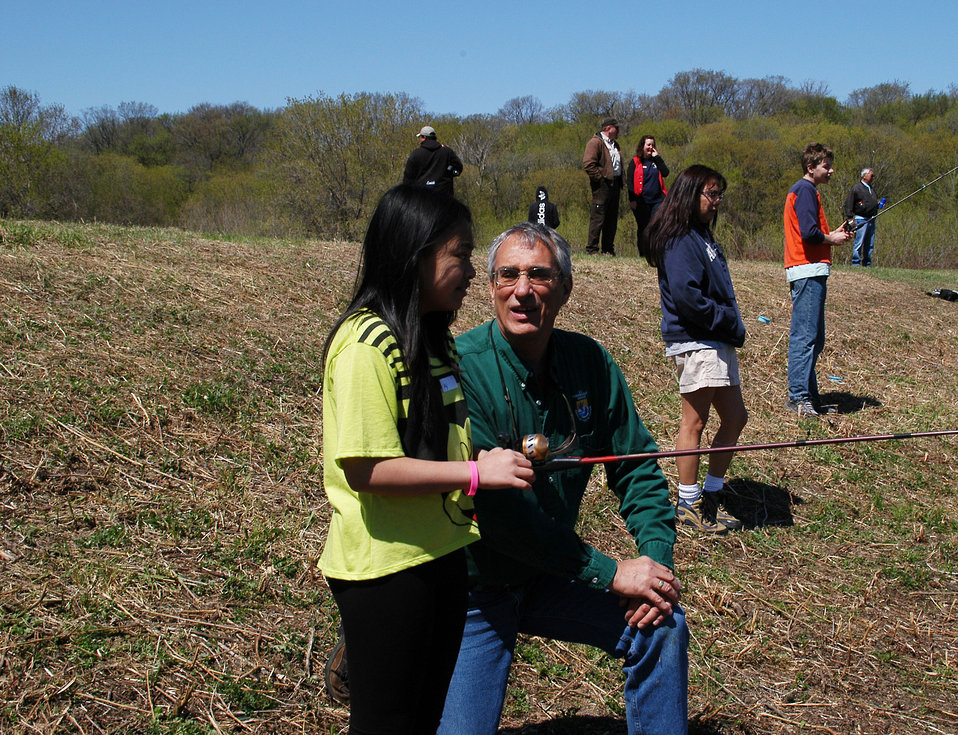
Regional Director Tom Melius Talks with Student About Fishing

Regional Director Tom Melius and student exchange words on catching a fish.